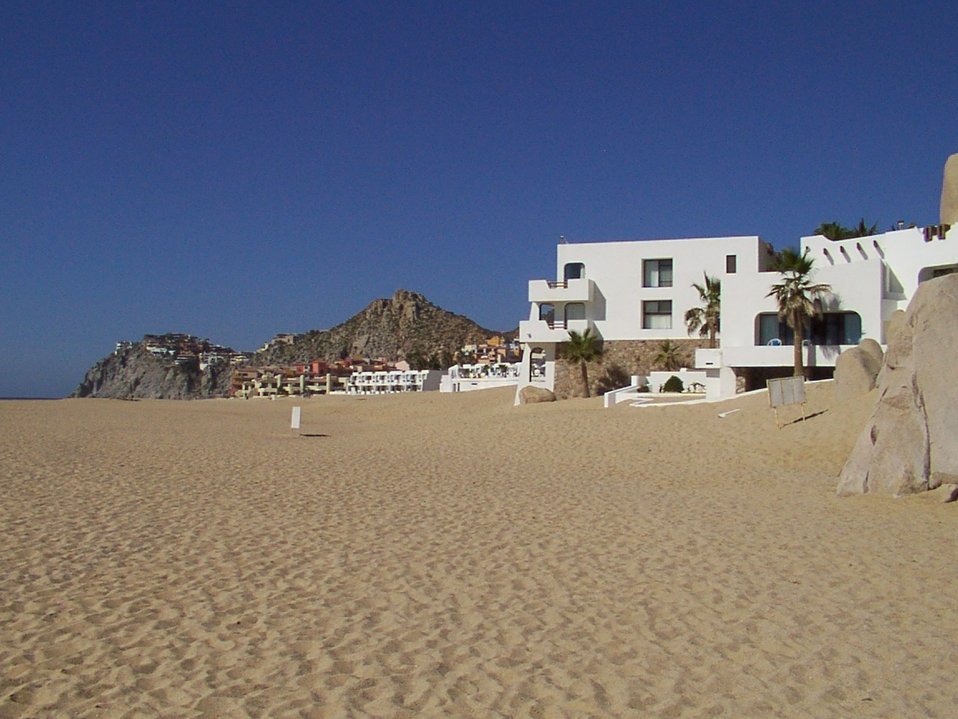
Family vacation photo taken Christmas 2003, view from southern end of Playa Solmar, Cabo San Lucas, looking north. Hotel Solmar is in the foreground, with parts of the TerraSol and Playa Grande resorts visible behind it. As I recall, the signs in the foreground warn against swimming; there are swift currents here. The houses on the top of the cliff are part of Pedregal, which are private vacation homes.